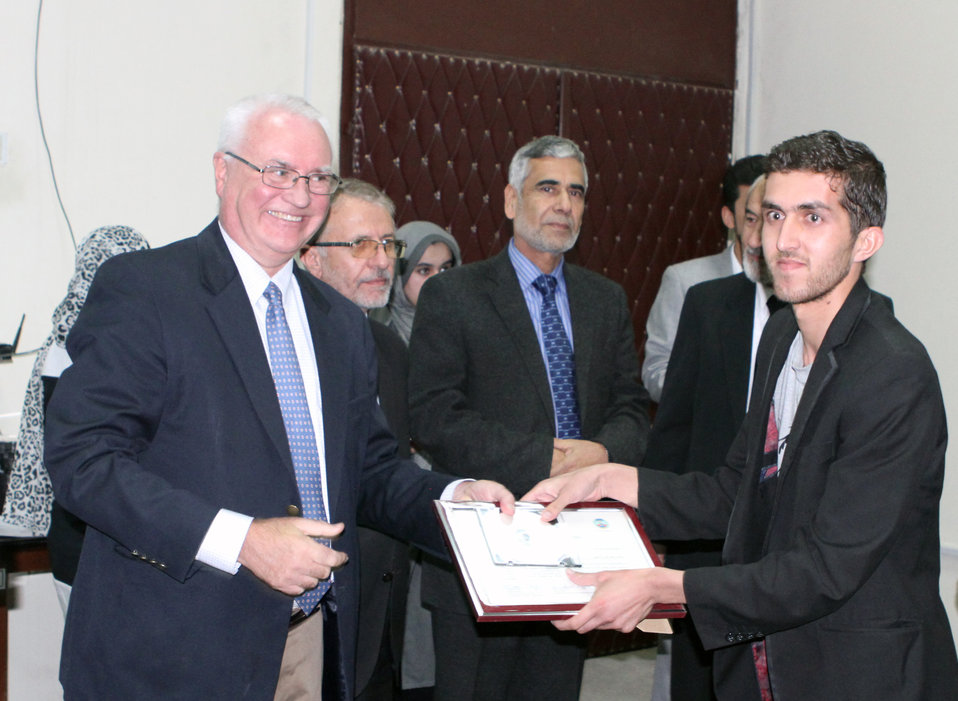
Mr. Charles Drilling, Director of USAID’s Afghanistan Office of Economic Growth and Infrastructure, awards a certificate to a student for completing a training course on Dams Design, Construction, and Operation and Maintenance. USAID sponsored the training.